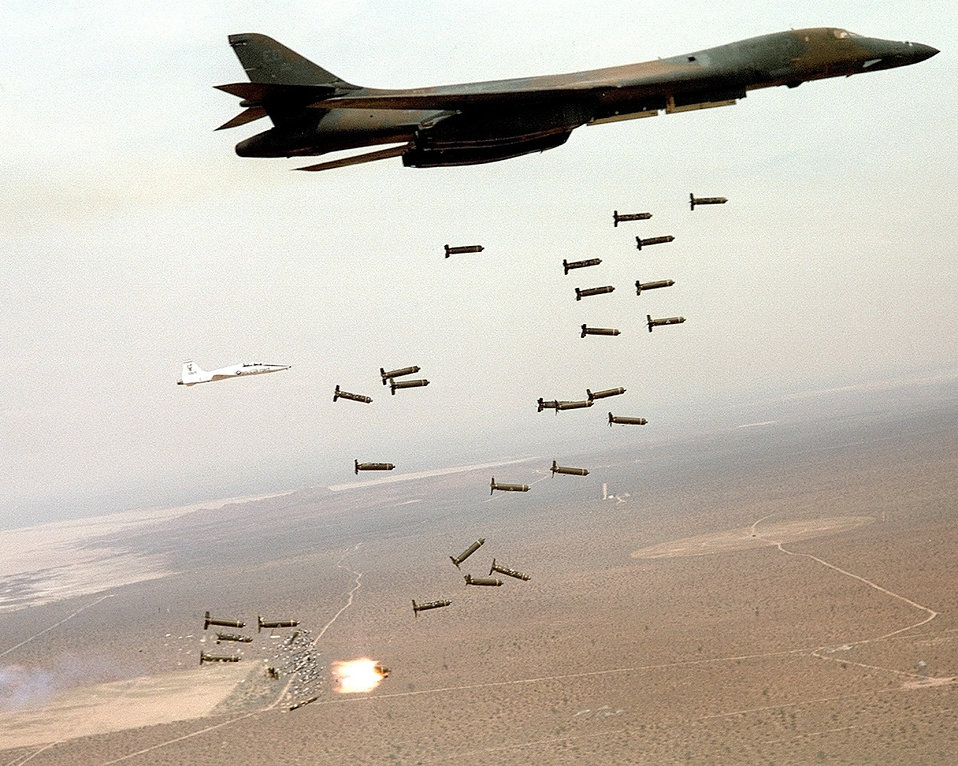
Bombs away!

FILE PHOTO -- A B-1B Lancer unleashes cluster munitions. The B-1B uses radar and inertial navigation equipment enabling aircrews to globally navigate, update mission profiles and target coordinates in-flight, and precision bomb without the need for ground-based navigation aids.